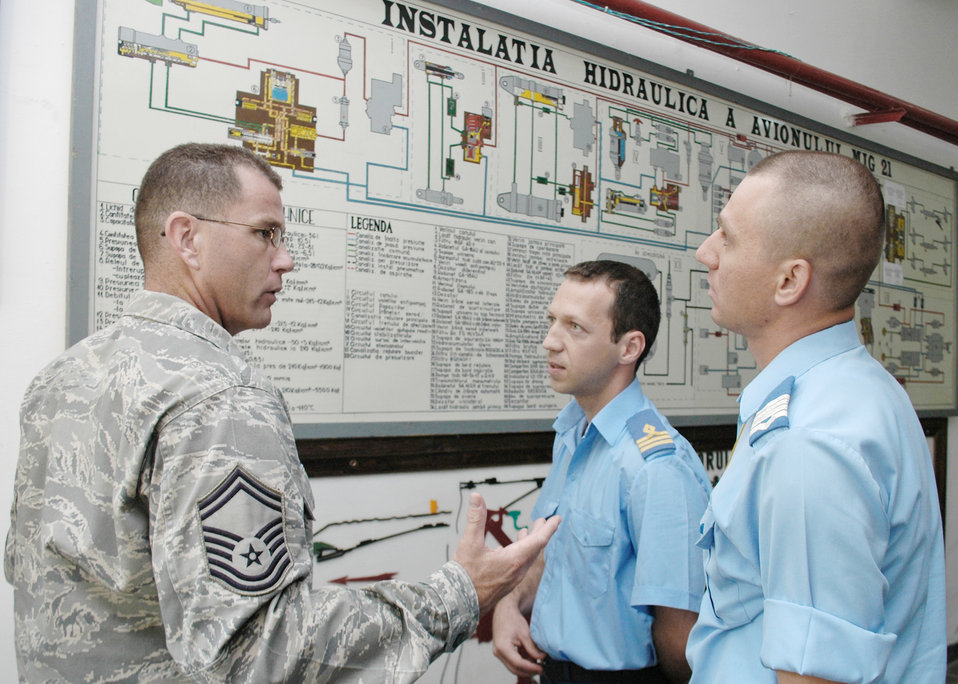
USAFE Airmen retool to enhance tradition of Building Partnerships

Senior Master Sgt. Timothy Kellner asks Romanian Air Force Warrant Officer Second Class Dima Valentin, (far right), questions about the hydraulic system for the MiG-21 Lancer Aug. 25, 2009. Sergeant Kellner's visit to the Traian Vuia Air Force Warrant Officer and NCO Military School in Boboc, Romania, is part of a three-person U.S. Air Forces in Europe Maintenance NCO Training Program Traveling Contact Team who met with Romanian aircraft maintainers and WO and NCO school instructors Aug. 25-28, 2009. Sergeant Kellner is the 31st Maintenance Group quality assurance superintendent.